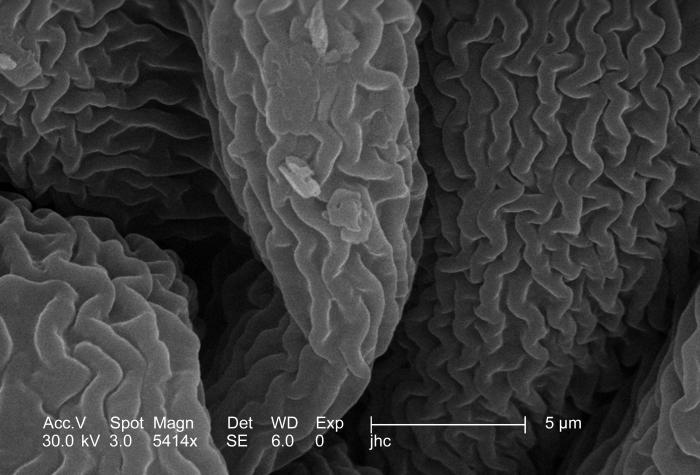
Under a high magnification of 5414x, this scanning electron micrograph (SEM) revealed some of the ultrastructural details seen on the surface of a "crimson clover", Trifolium incarnatum flower petal. This clover was blooming during the month of March on the grounds of the Centers for Disease Control headquarters in Atlanta, Georgia. Being that flower petals are actually modified leaves, the highly textured surface, composed of many cavitations and protuberances, are actually modification of the plant's leaf morphology. The particulates settled atop the convoluted petal surface, are plant materials common to the flower's environment.